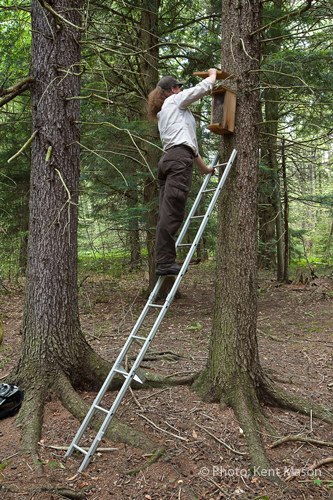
Refuge Biologist Checks Flying Squirrel Box

A refuge biologist checks for activity in a squirrel box mounted on a red spruce tree. The West Virginia Northern flying squirrel was removed from the federal list of endangered species in September 2008, but the refuge continues to manage habitat for the viability of the species.